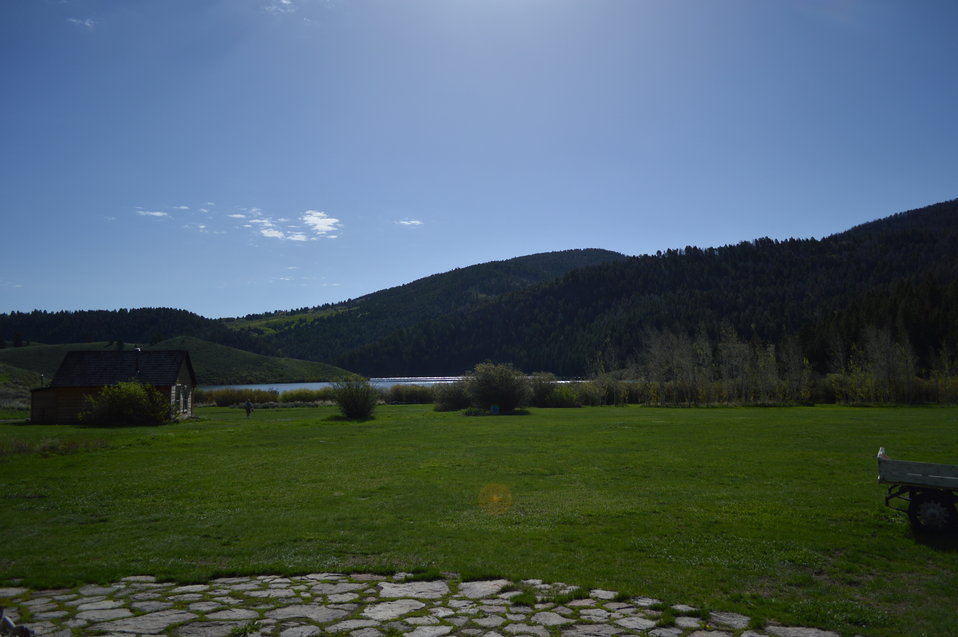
Regional Leadership Visit to Montana 2014